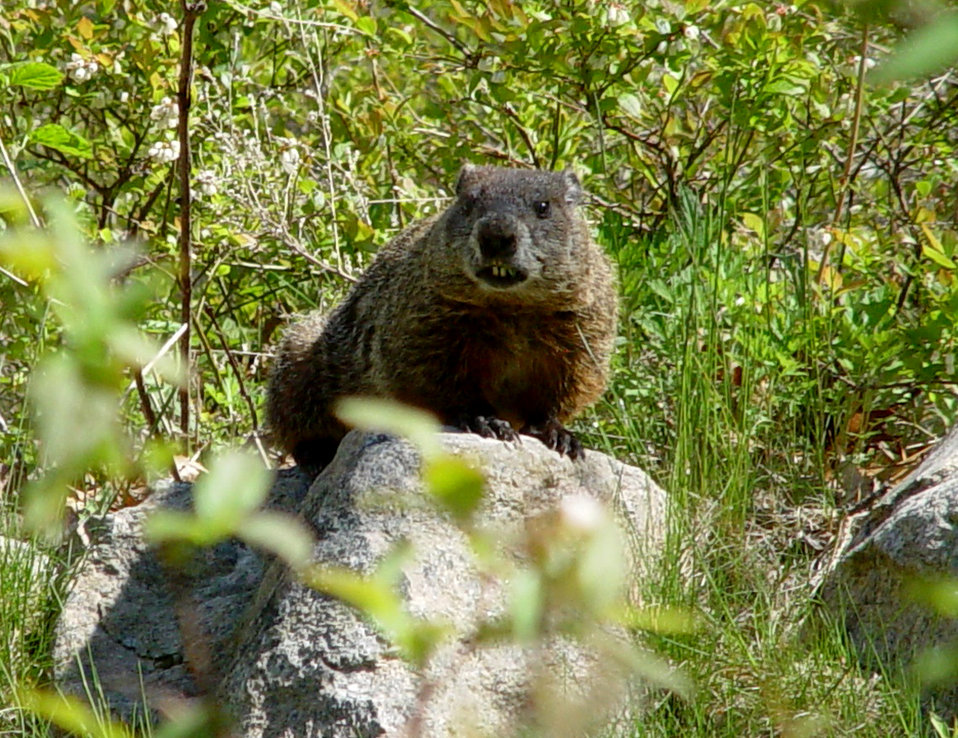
Photo of the Week - Woodchuck (RI)

Photo of the Week - 9/4/12

Woodchuck photographed at Ninigret National Wildlife Refuge.